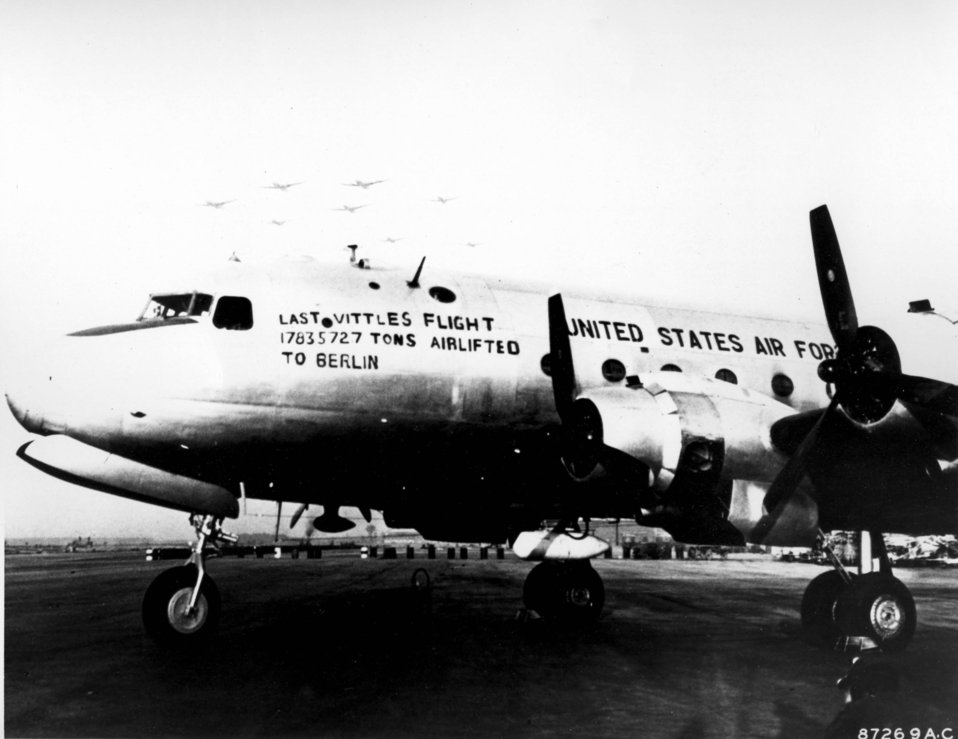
Vittles flight, C-7

Rhein Main Air Force Base, Frankfurt, Germany -- The last Vittles flight left Rhein Main Air Base on September 30, 1949 at 1845 hours as sister planes of the airlift flew overhead in formation, marking the end of a dramatic chapter in air history. High-ranking USAFE officials, an Air Force Band, several airlift squadrons, Rhein Main civilians, wives and military personnel and a large scattering of the press were on hand to wave off this significant flight. C-7